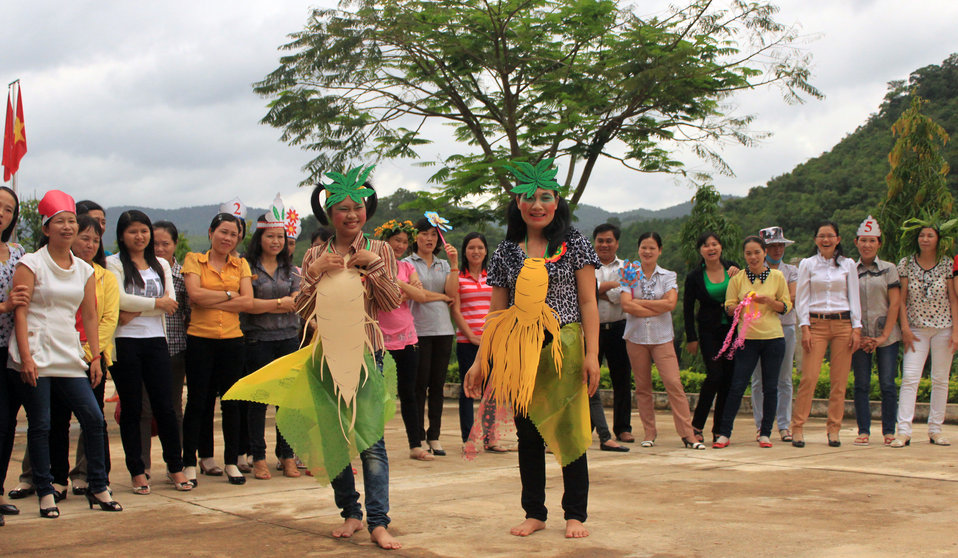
Teachers in Kon Tum practice what they learned from USAID-funded intensive training courses